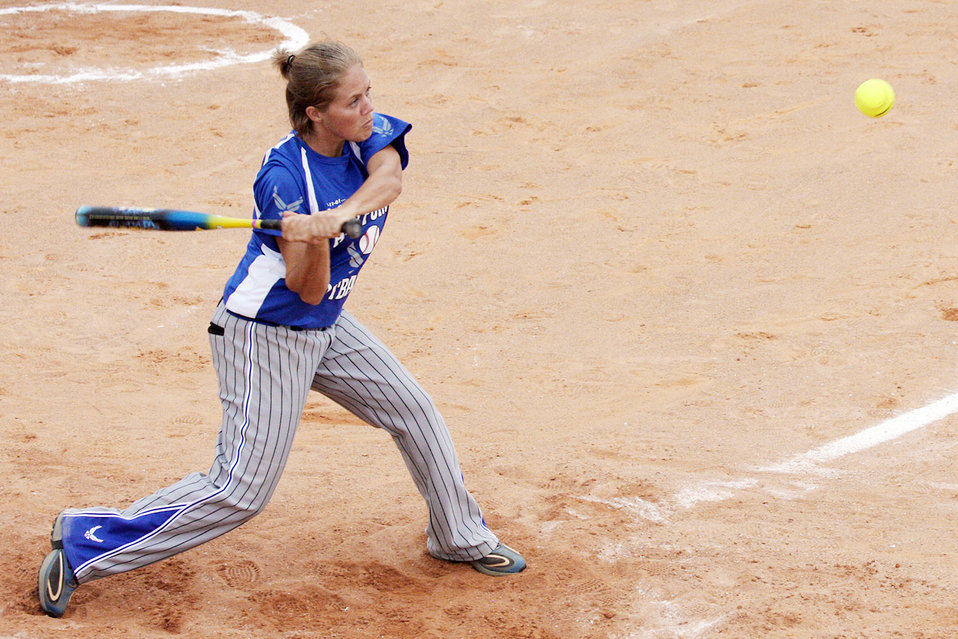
Air Force teams earn gold medals at armed forces softball championships

Kathy Braun gets a base hit during the Armed Forces Softball Championships. The Air Force men's and women's softball teams earned gold medals at the event. Braun is from Offutt Air Force Base, Neb.